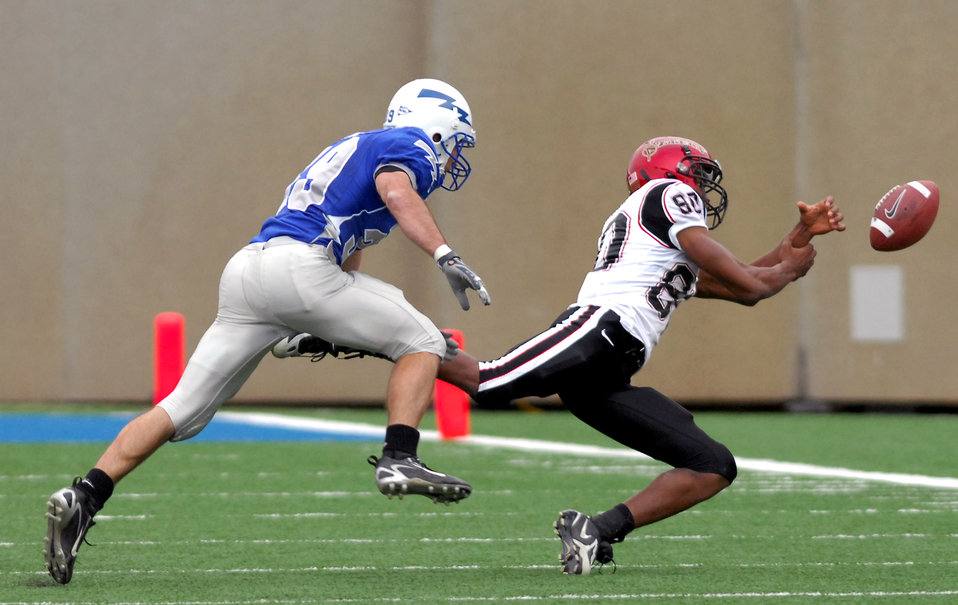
Football: Bowl-bound Falcons dominate regular season finale

Falcon cornerback Garrett Rybak covers San Diego State wide receiver Vincent Brown during Air Force's 55-23 win over the Aztecs Nov. 17 at the Academy's Falcon Stadium. The bluesuiter defense limited Brown to 3 catches for 31 yards.